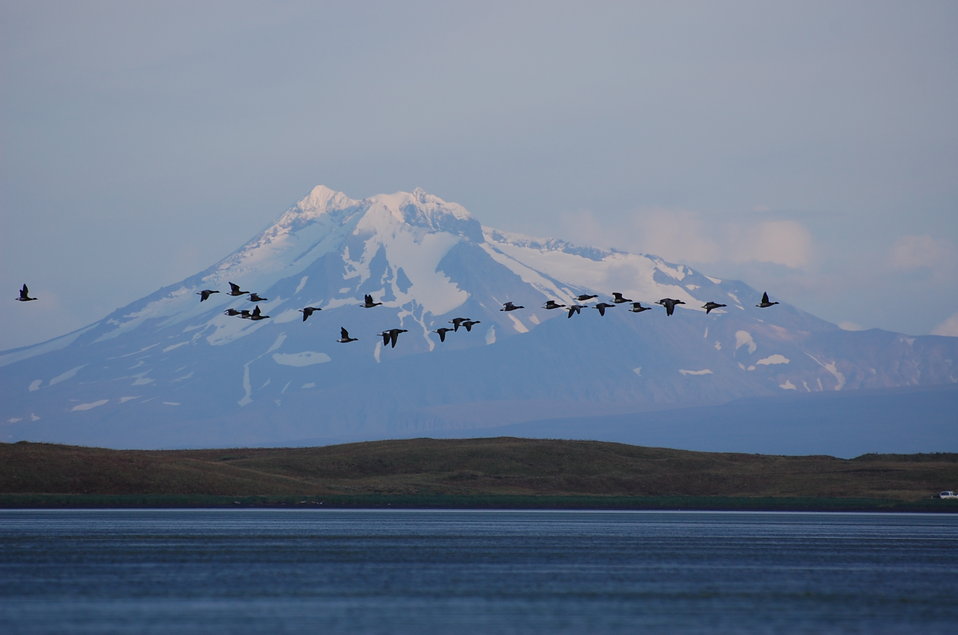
Brant at Izembek Lagoon, Izembek National Wildlife Refuge